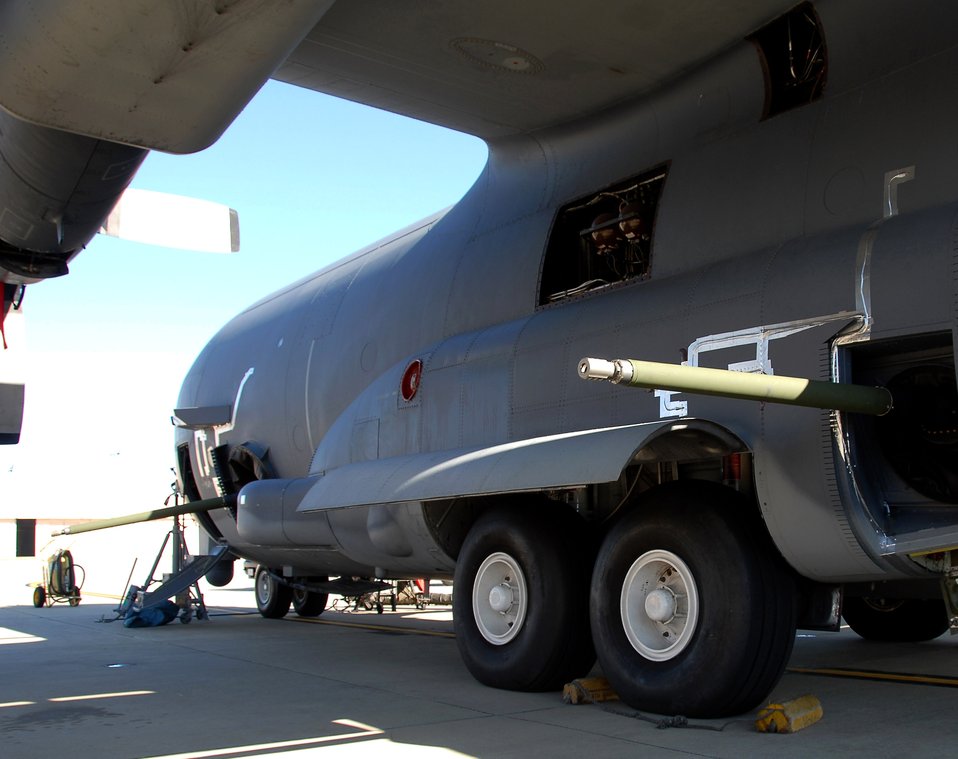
Spooky gunship armed with new cannons

Bushmaster 30 mm cannons protrude from the gunports of an AC-130U Spooky gunship during tests Jan. 26 at Hurlburt Field, Fla. The 30 mm gun will eventually replace both the 40 mm cannon and 25 mm gun on U-model gunships.